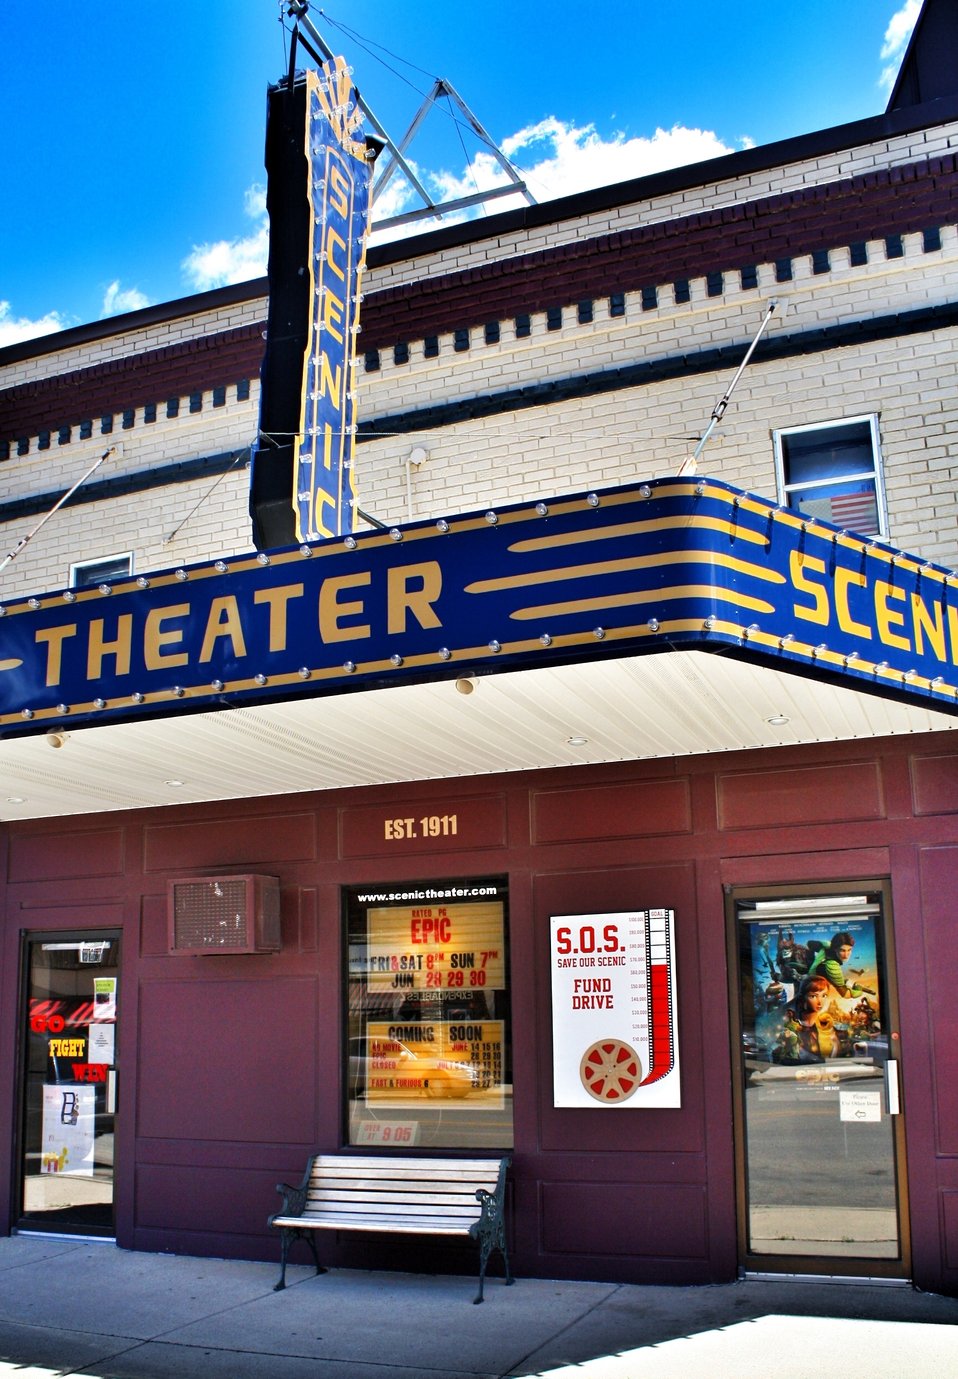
Lisbon Scenic Theater

The 1911-built Scenic Theater in Lisbon, ND is the oldest continually operating theater in the U. S. The theater was struggling with the high cost to convert from a film to digital format. Film had been an industry standard for more than a hundred years, but Hollywood studios will stop printing on actual film by the end of the year. Seven local residents organized the Save Our Scenic (S.O.S.) campaign in April and in three months they raised over $74,000. Donations came in from folks in 15 different states and over 300 local donors. The U.S. Department of Agriculture ‘s (USDA) Rural Development (RD) provided partial funding through the Rural Business Enterprise Grant program to the City of Lisbon, ND.